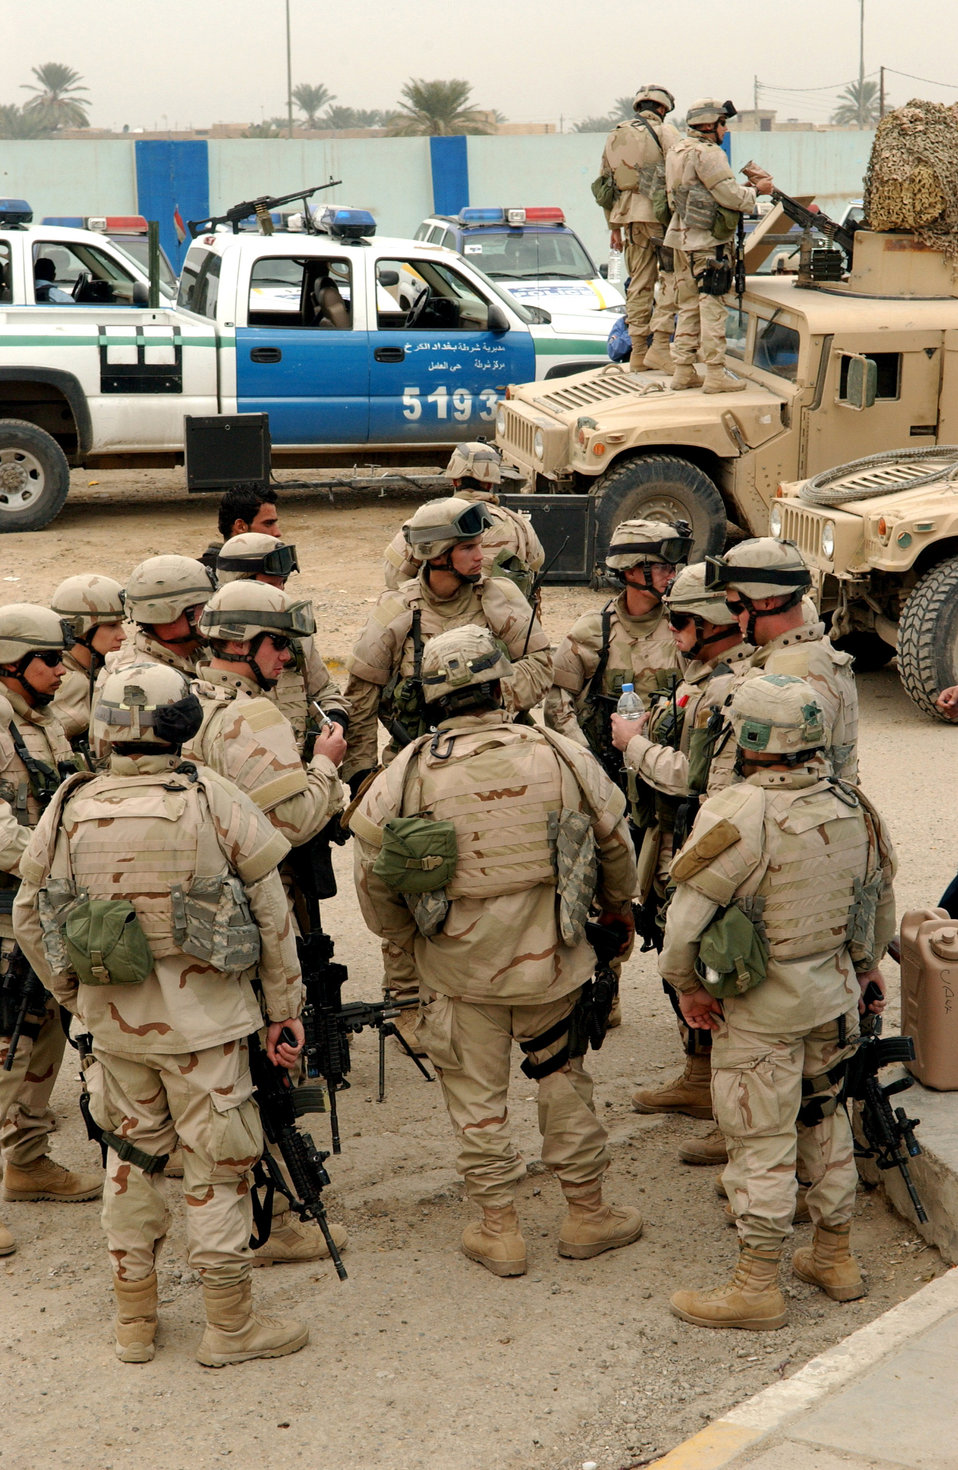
Street patrol

Airmen from the Detachment 7, 732nd Expeditionary Security Forces Squadron conduct a mission brief at the Hy Al-Amil police precinct Nov. 23 in Baghdad, Iraq. Airmen from from the unit deploy into the city streets of Baghdad assisting Iraqi police in achieving self-sufficiency.